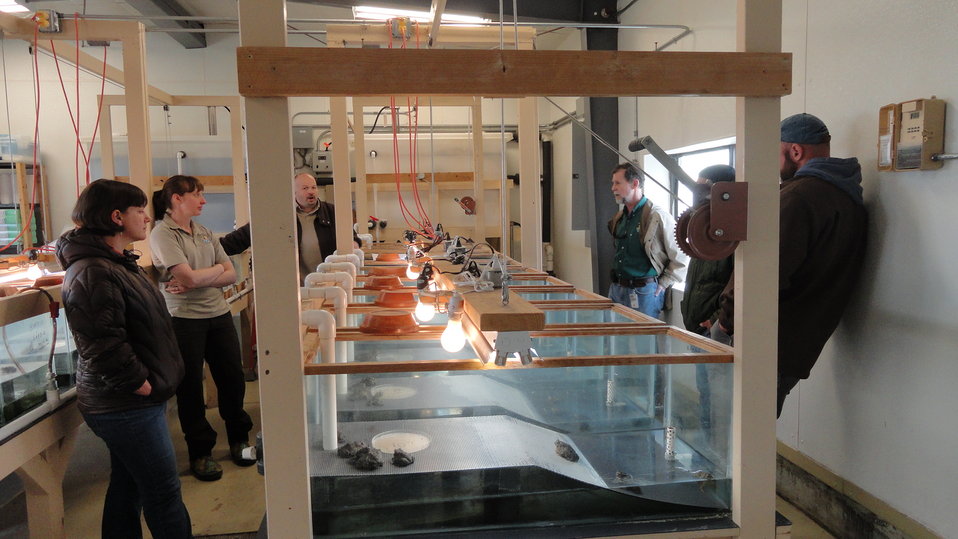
Visiting Saratoga National Fish Hatchery

In April of 2014, regional office employees visited Saratoga National Fish Hatchery to learn more about its efforts towards recovering the Wyoming toad (Bufo baxteri).

The hatchery adopted a unique role in becoming the first unit in the National Fish Hatchery System to become involved in rearing endangered amphibians. The Wyoming toad was a common sight on areas of the Laramie Plains, Albany County, Wyoming, into the early 1970s but the species' populations crashed in the mid-1970s. The Wyoming toad was listed as endangered by the U.S. Fish & Wildlife Service in January 1984. Found only in southwestern Wyoming, the Wyoming toad is considered the most endangered amphibian in North America. The hatchery maintains a captive population for breeding, rearing, and refugia, and the offspring from this program will be used for reintroduction efforts.